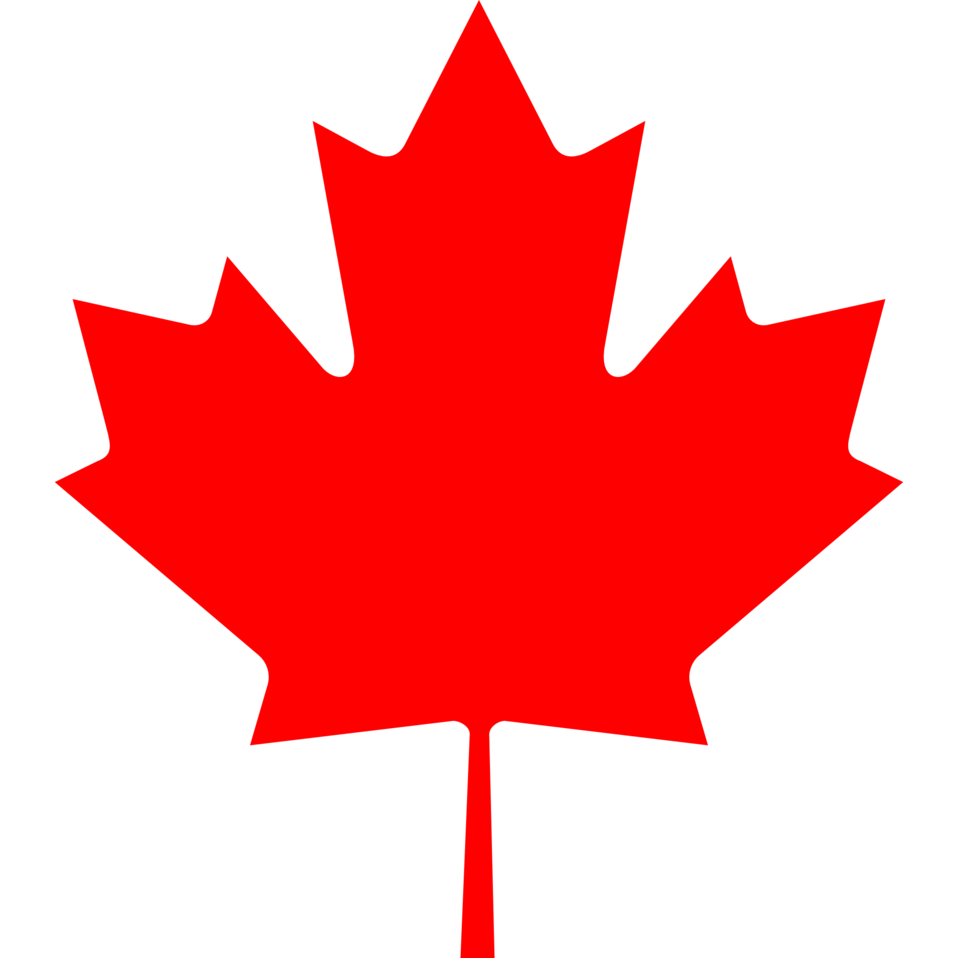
Canada Maple Leaf